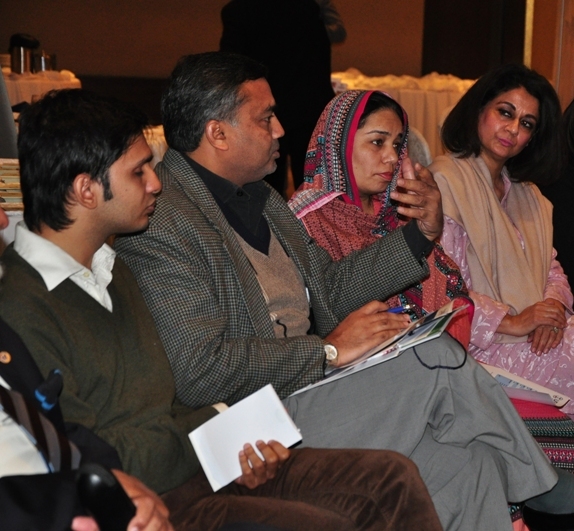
Education Workshop 241